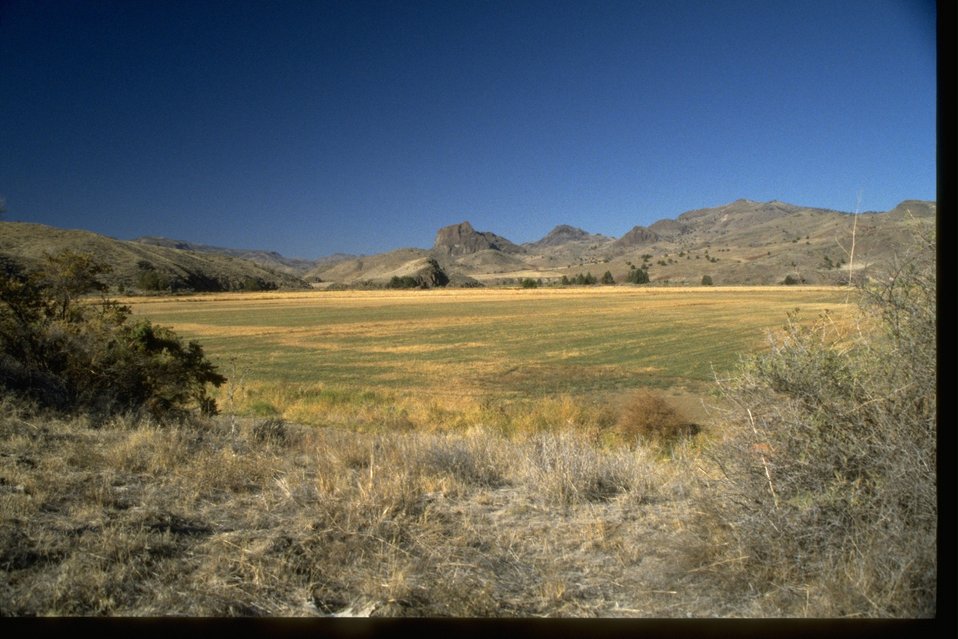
Bridge Creek agricultural fields.